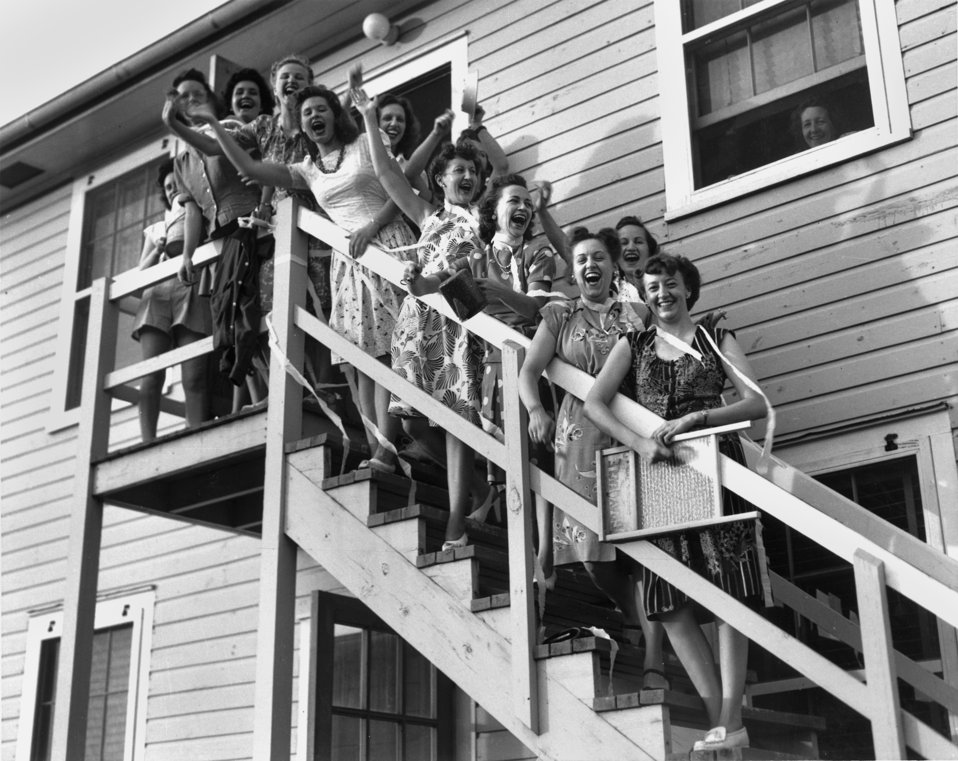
'V.J.' Day - Jackson Square Oak Ridge

PRO946-6 DOE photo by Ed Westcott
'V.J.' Day - Jackson Square Oak Ridge Tennessee 8/14/45